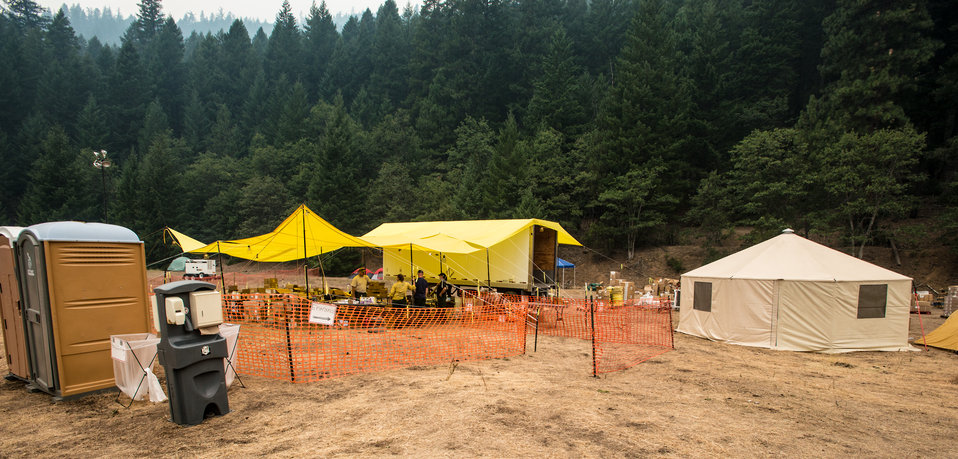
The Supply Cache is a major logistics factor in fighting the Salmon River Complex Fire burning northwest of Sawyers Bar and west of Etna and Yreka, CA in the Klamath National Forest, on Tuesday, Aug. 6, 2013. It is vital that when a firefighter needs fire resistant clothing, a Mccloud Tool, Pulaski Axe, Combi Tool, or pumps, connectors and hoses to draw water from a portable reservoirs to pressurize hand line (fire hoses), they go to this centralized point to get readily available item for issue or replacement as needed. These supplies have been shipped from National Interagency Supply Cache System depots and/or other caches to this and other fires across the nation.